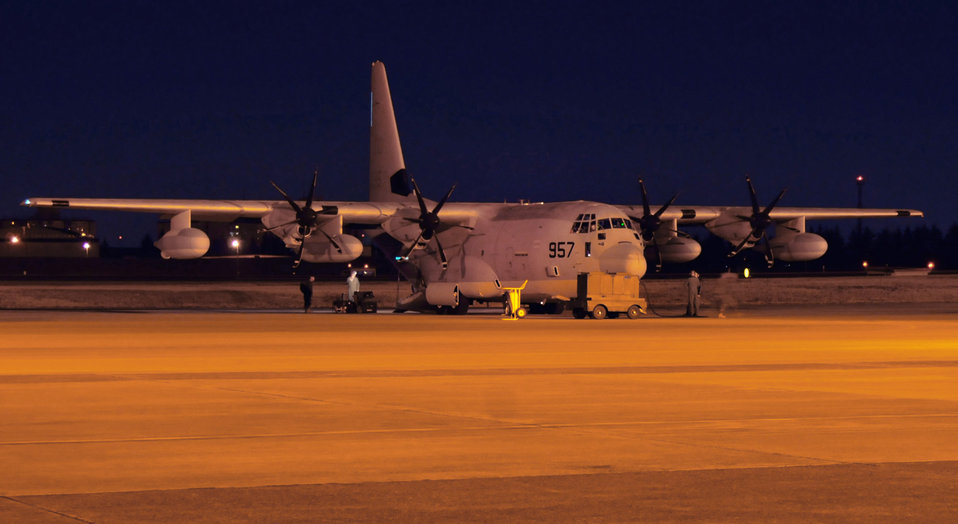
Japan?s earthquake and tsunami recovery effort

A U.S. Marine Corps KC-130J Super Tanker carrying U.S. Marines arrives at Yokota Air Base, Japan, March 12, 2011. The flight was part of the first wave of American disaster relief forces to assist in Japan?s earthquake and tsunami recovery effort.